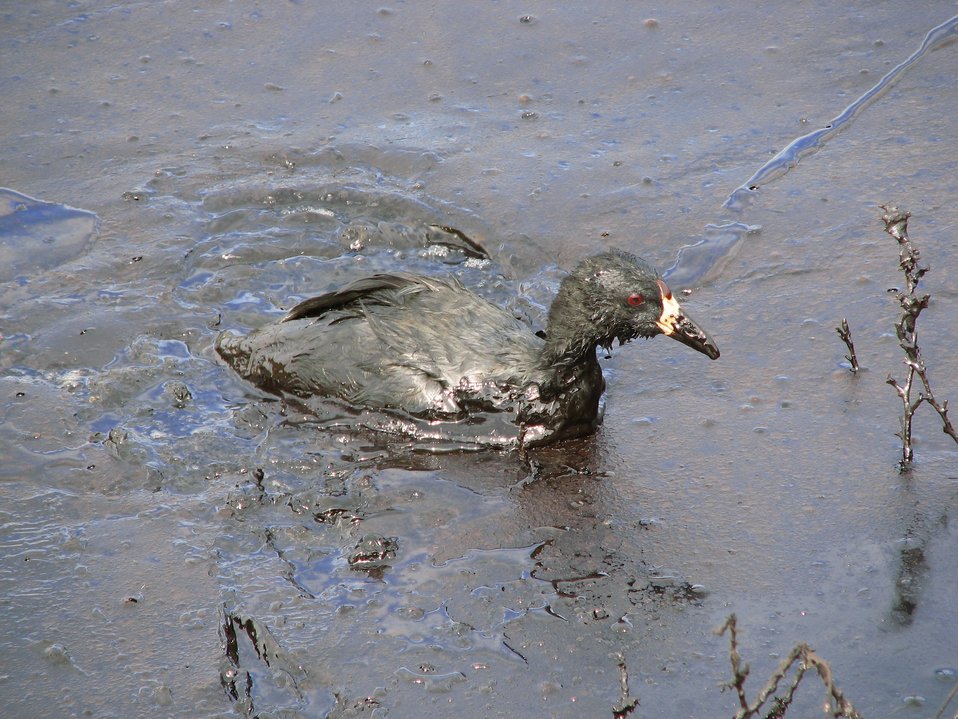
American Coot Covered in Oil

American coot on an oil-covered evaporation pond at a commercial oilfield wastewater disposal facility. An estimated 500,000 to 1,000,000 migratory birds die each year in oilfield production skim pits and oil-covered evaporation ponds.